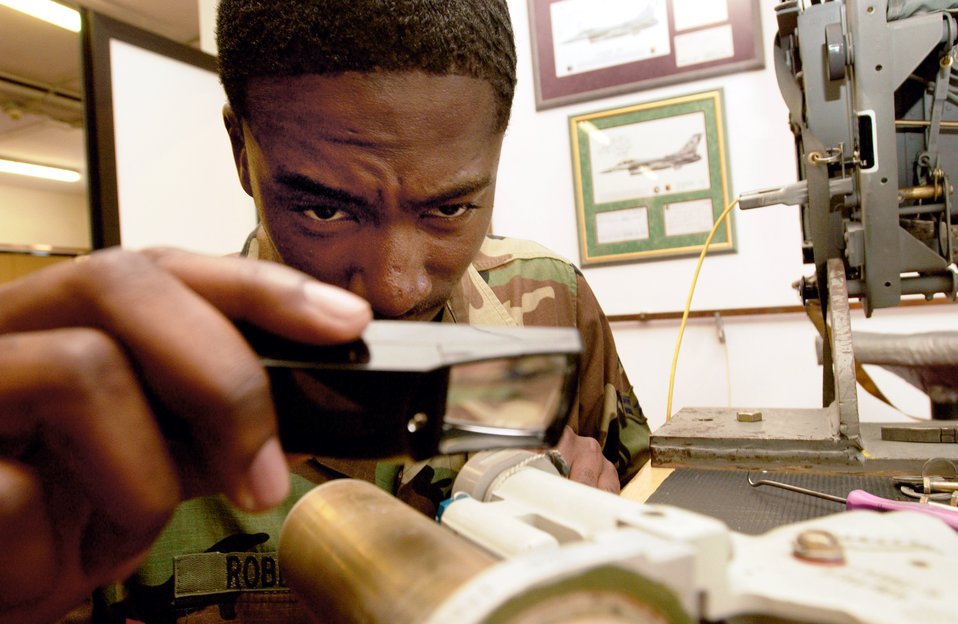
A close look

AVIANO AIR BASE, Italy -- Airman 1st Class Jerrell Robinson inspects a stabilization control assembly component for an ejection seat at the 31st Maintenance Squadron Egress Shop here June 16.